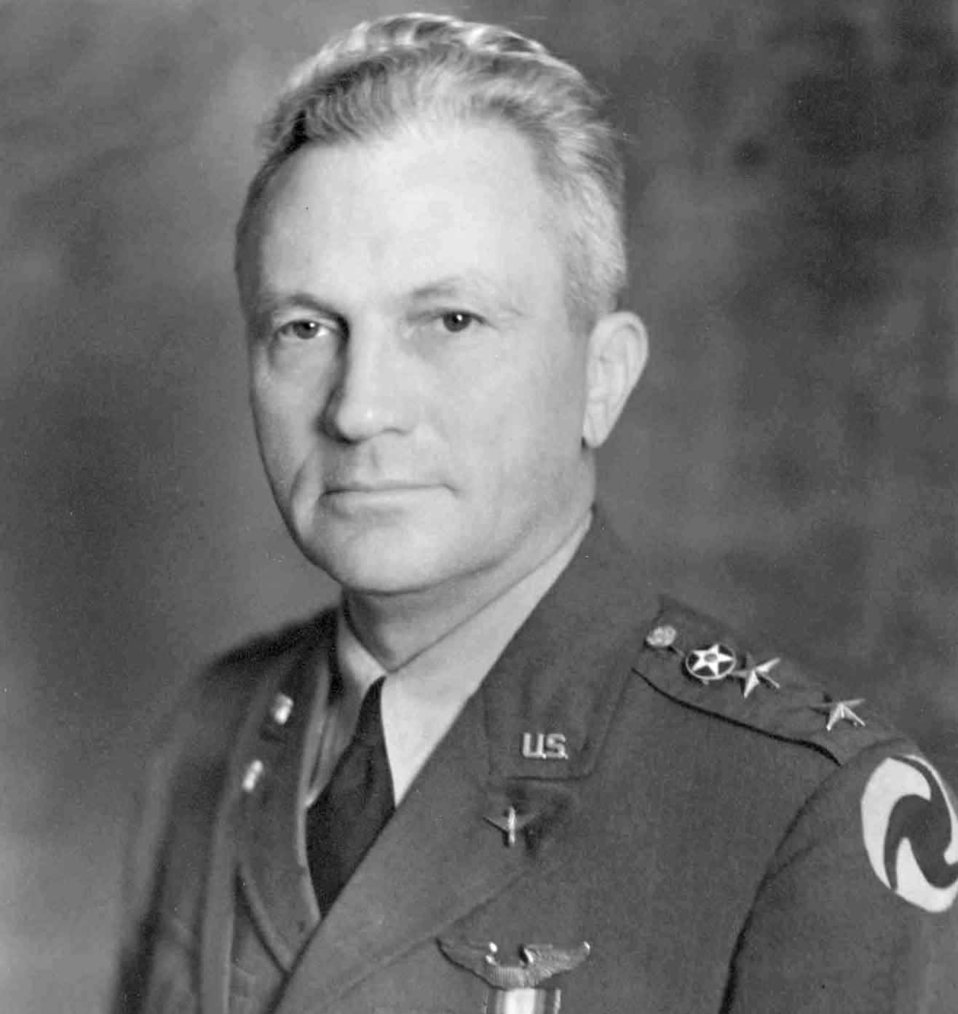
General Frank M. Andrews

EARLY YEARS -- General Frank M. Andrews, a founding father of the independent Air Force, was born February, 1884, in Nashville, Tenn.